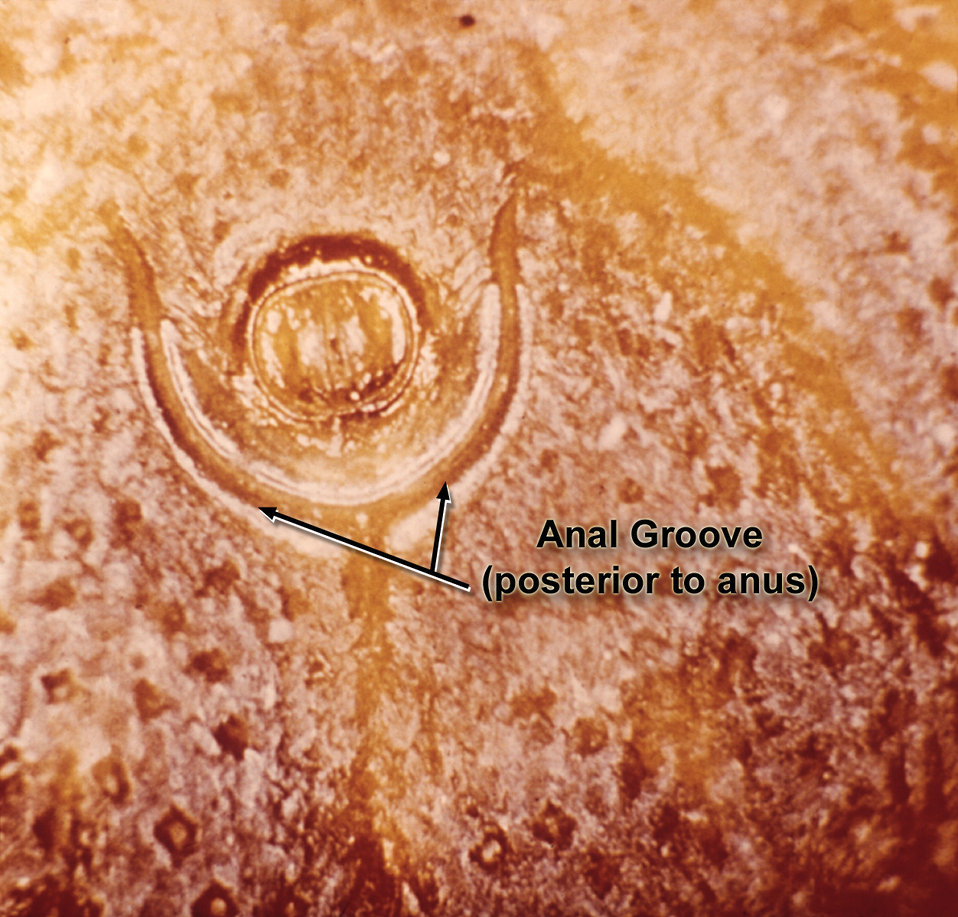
The position of the anal groove on this tick's abdomen places it posterior and lateral to the anal orifice.